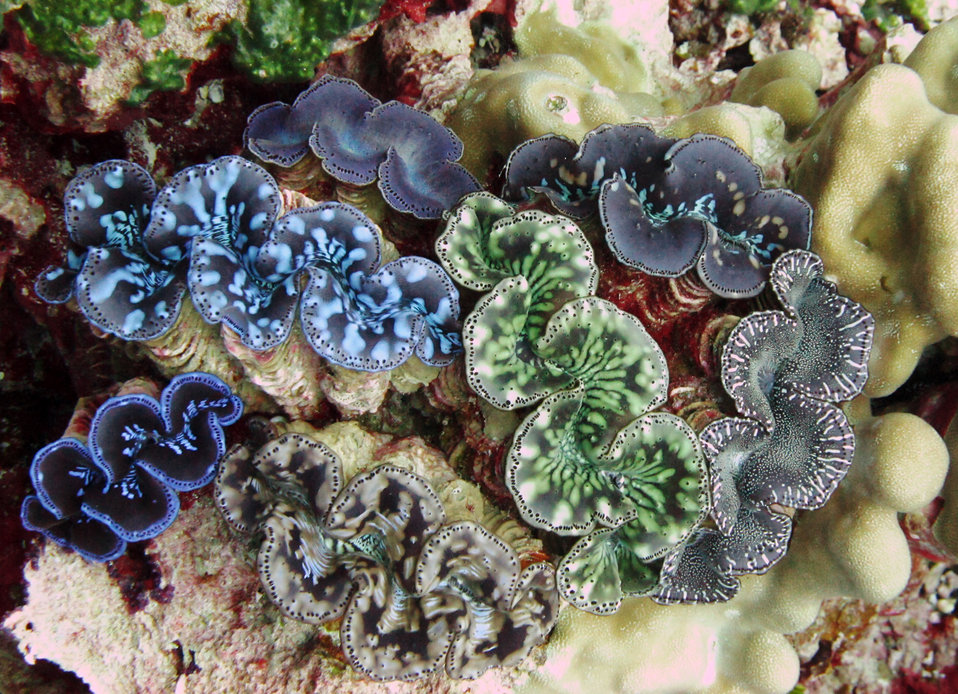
Both Palmyra Atoll and Kingman Reef National Wildlife Refuge are home to rare giant clams.